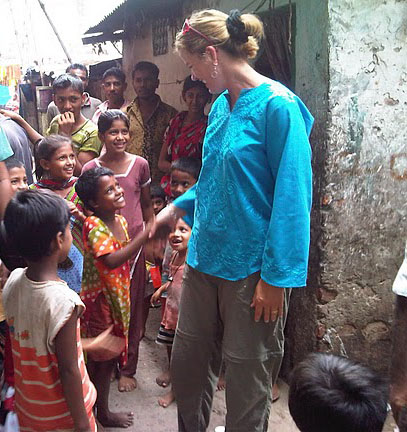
DAS Clements Is Greeted By a Formerly Stateless Child in Bangladesh

Deputy Assistant Secretary of State for Population, Refugees and Migration Kelly Clements is greeted by a formerly stateless child in Geneva camp in Dhaka, Bangladesh, on June 7, 2011. The girl now has the right to both education and Bangladeshi nationality.